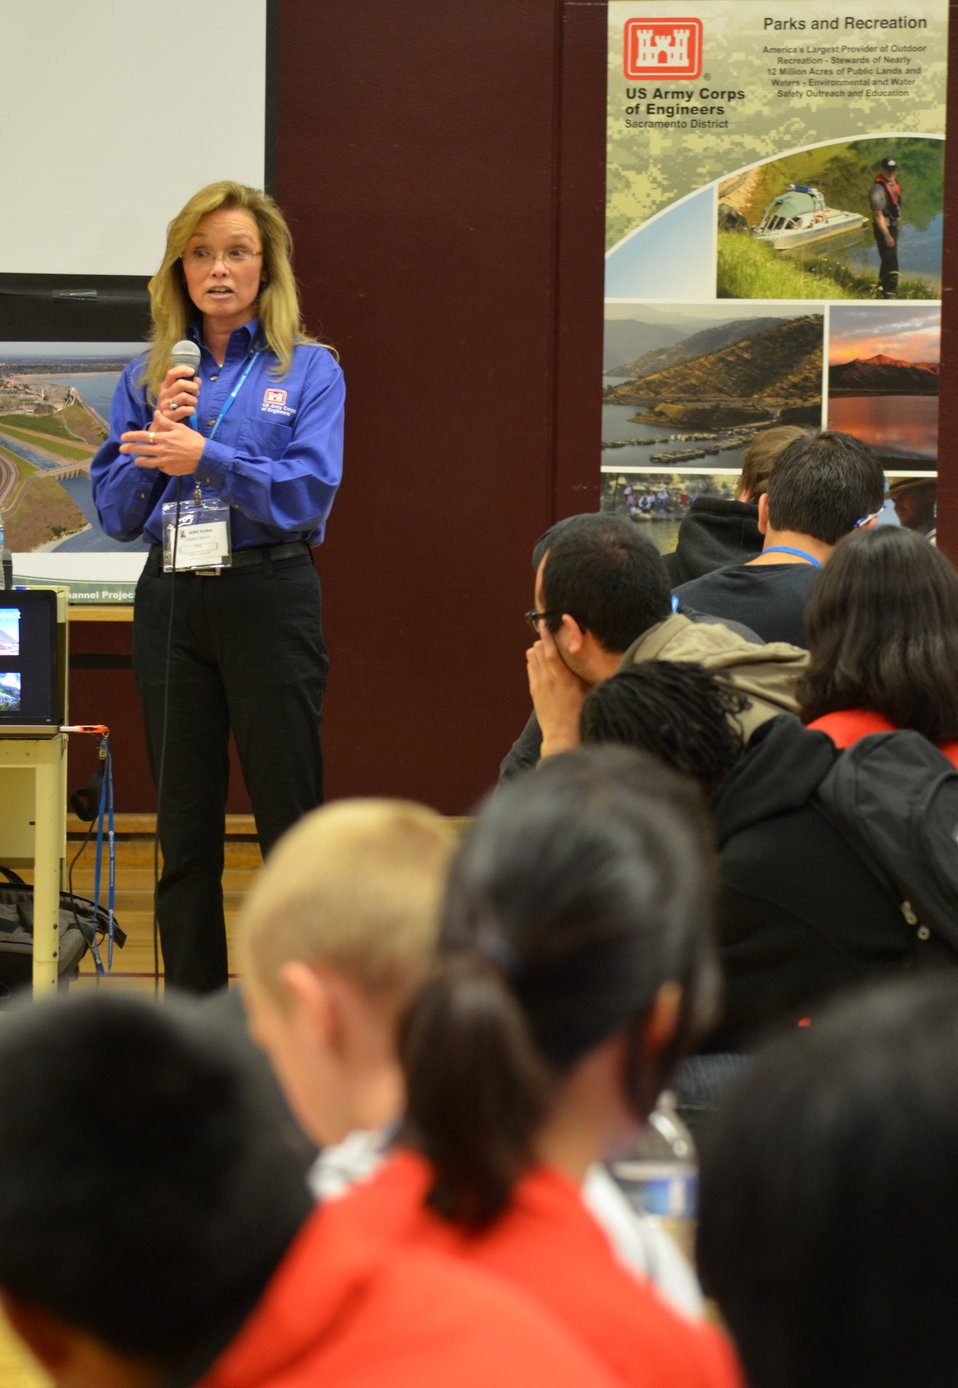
Hiram W. Johnson High School grad Linda Finley on her Corps career

Linda Finley, deputy for project management for the U.S. Army Corps of Engineers Sacramento District, speaks to students at Hiram W. Johnson High School in Sacramento, Calif., during a science, technology, engineering and mathematics - or STEM - event Nov. 9, 2012. The district hosted the STEM event for 125 students, discussing STEM-related degrees and careers, and providing three fun and team-focused engineering challenges. “This event is really special,” said Finley. “Coming here as a graduate of Johnson High, Class of 1976, to come back to this school and see the tremendous changes, and incredible support for students that have a skill set towards math and science - it's just such a wonderful, warm feeling for me.”